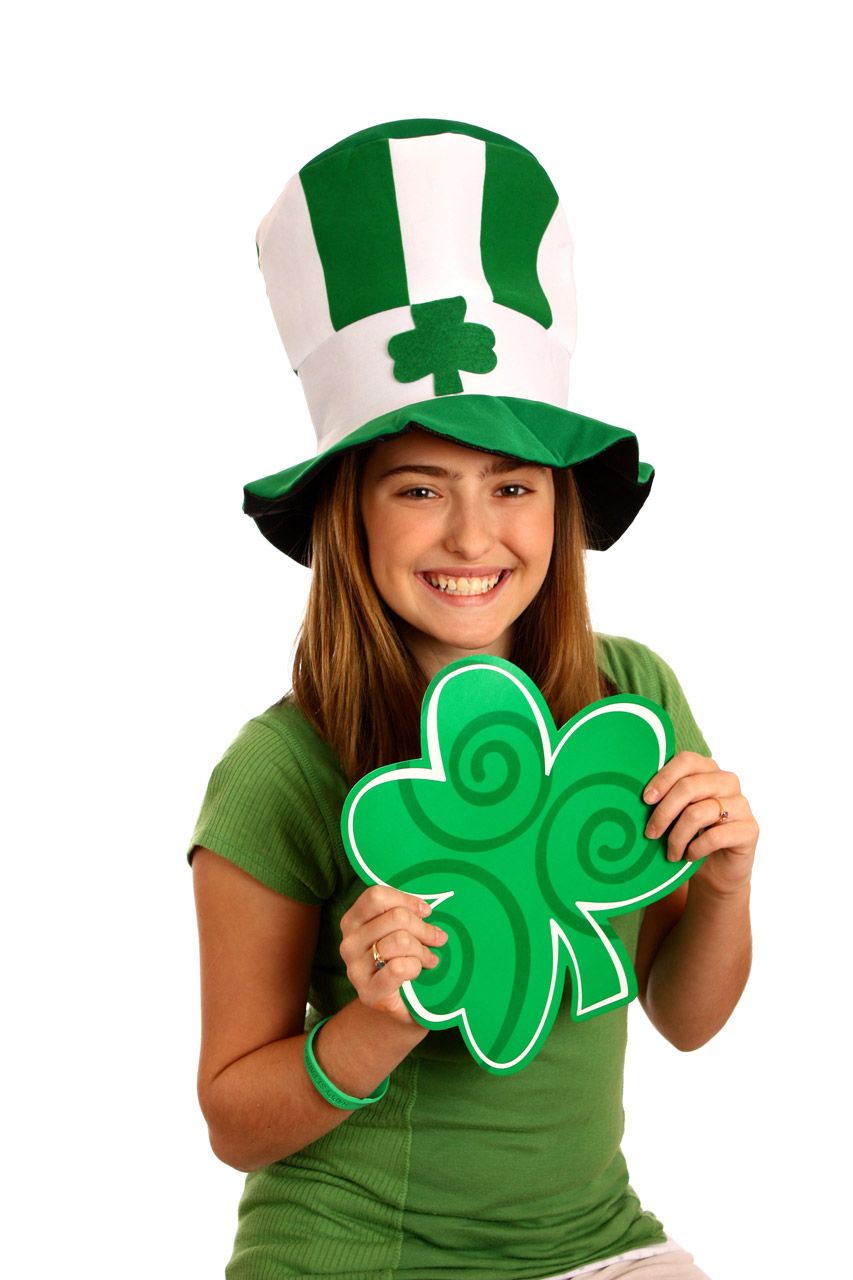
Saint patrick's day girl

A cute young girl dressed up for saint patrick's day holding a large clover.